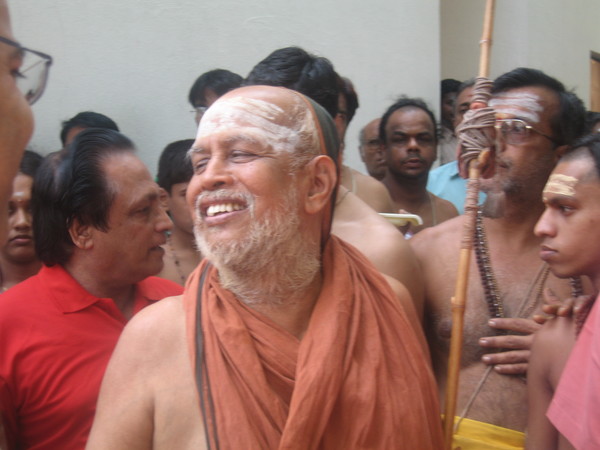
Jayendra Saraswathi